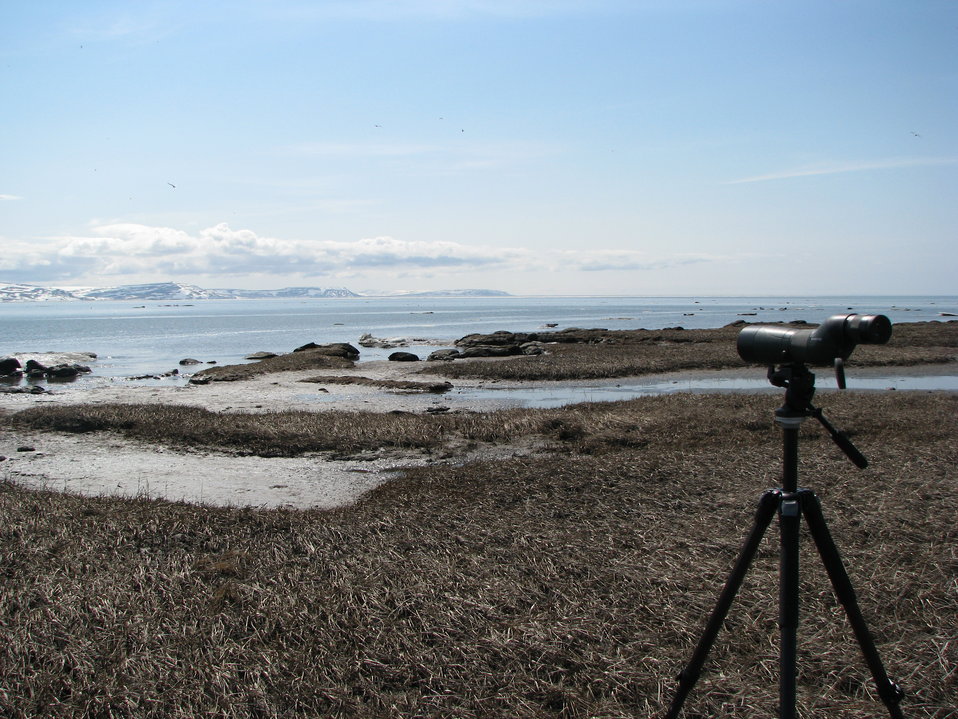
Scouting for birds

One of the past times on days off or in the evenings is watching birds.

USFWS Yukon Delta NWR